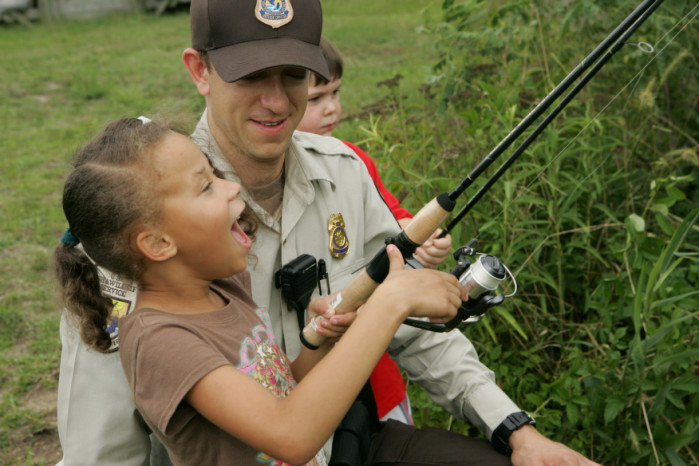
'I've got one!'

Young girl hooks her first fish
Alligator River National Wildlife Refuge, NC
(Photo: Steve Hillebrand, USFWS)

Conserving the Future - In July, 2011, thousands of Service employees, partners of the Service and wildlife enthusiasts gathered in Madison, WI for the 'Conserving the Future' conference that outlined a new, decade-long conservation plan for wildlife.